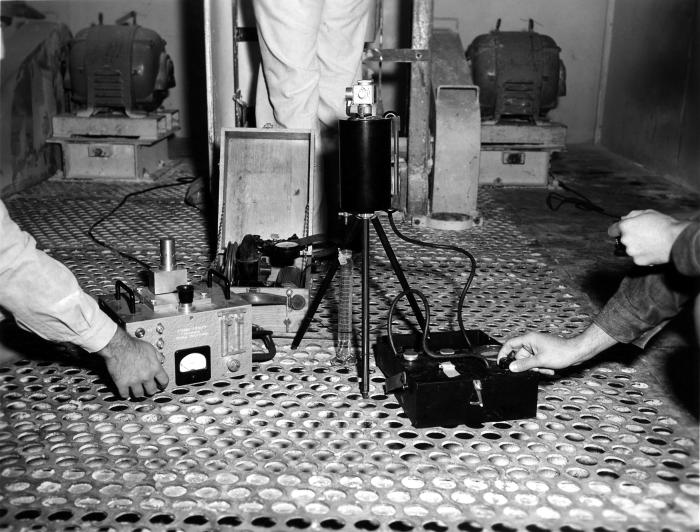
From 1958, this historical image was provided by the Center for Disease Control's (CDC), National Institute for Occupational Safety and Health (NIOSH). It depicted industrial medicine in action, and was included in the U.S. Public Health Service (USPHS) publication, no. 601, entitled, 'Pneumoconiosis in Diatomite Mining and Processing', 1958. The photo showed Industrial Hygiene Division (IHD) investigators using air sampling devices, in order to monitor air quality in the workplace. One worker was standing at a product packing station with his back to the camera. This publication featured results of the Lompoc, California study of diatomaceous earth's negative health effects. The substance is a non-chemical pest control, consisting of the fossilized calcific remains of free floating algae called 'diatoms'. The naturally occurring, soft, chalk-like sedimentary rock material easily crumbles into powder, so its fine, but abrasive properties make it useful as a mechanical pesticide.